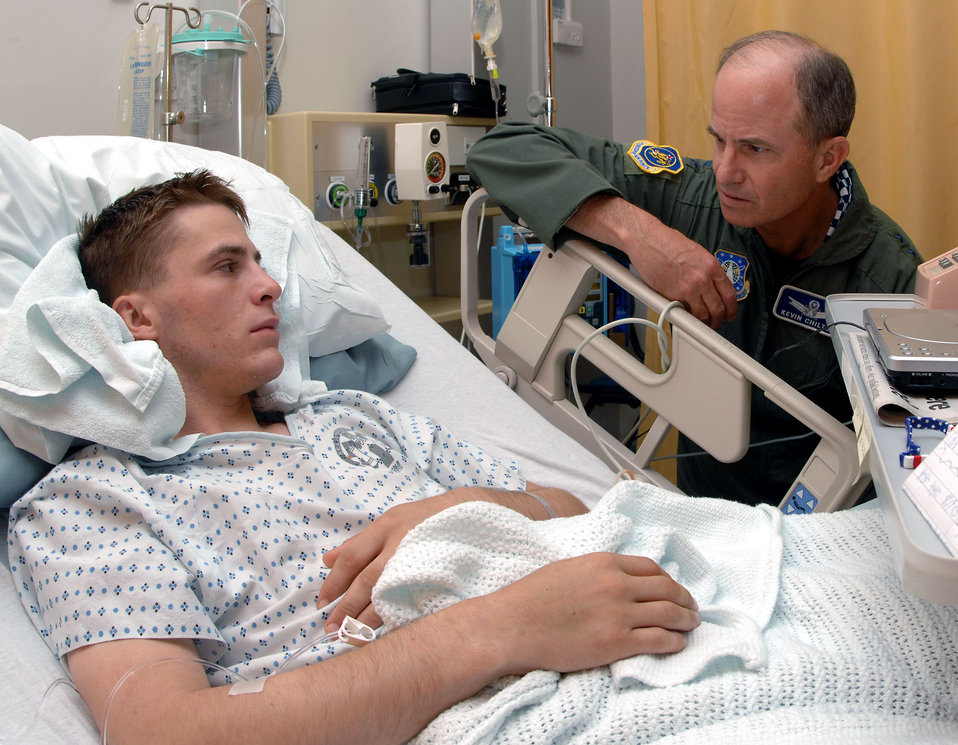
General lends support to warfighters

Gen. Kevin P. Chilton, commander of Air Force Space Command, listens as Army Spc. Eric Raymond discusses his injury. General Chilton visited wounded Airmen and Soldiers at Landstuhl Regional Medical Center, Germany, during his recent trip to U.S. Air Forces in Europe. General Chilton spent time with injured warfighters and familiarized himself with Airmen who work in AFSPC detachments in Europe.